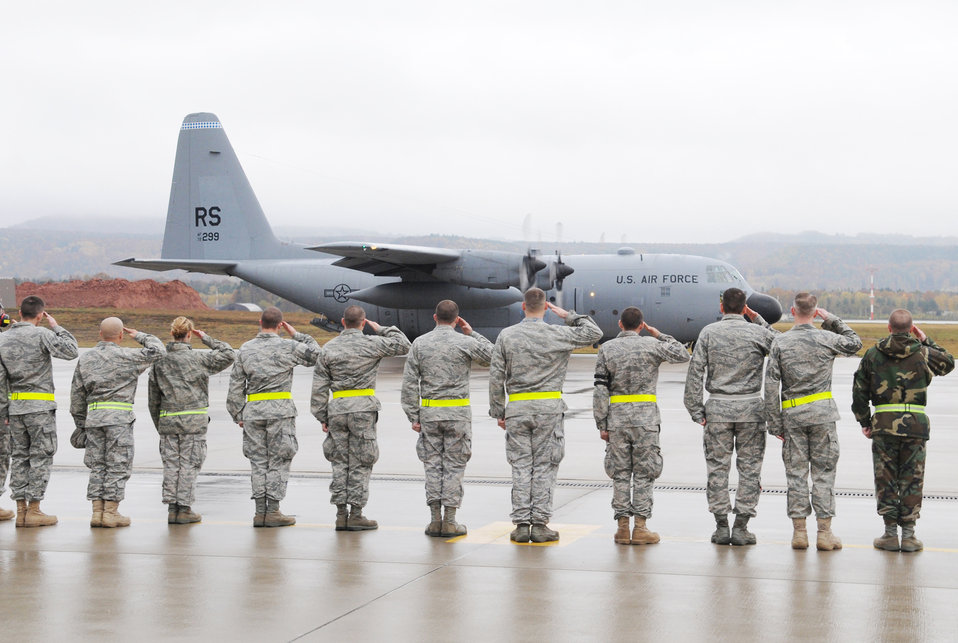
Ramstein's C-130E Final Departure

Airmen from the 86th Aircraft Maintenance Squadron at Ramstein Air Base, Germany, render a salute to the last C-130E Hercules as it taxies down the flightline Nov. 2, 2009, for departure. The E-model Hercules aircraft have provided more than 40 years of airpower to bases in the United States Air Forces in Europe, and are being replaced by the newer C-130J Super Hercules as part of revitalizing the Air Force fleet.